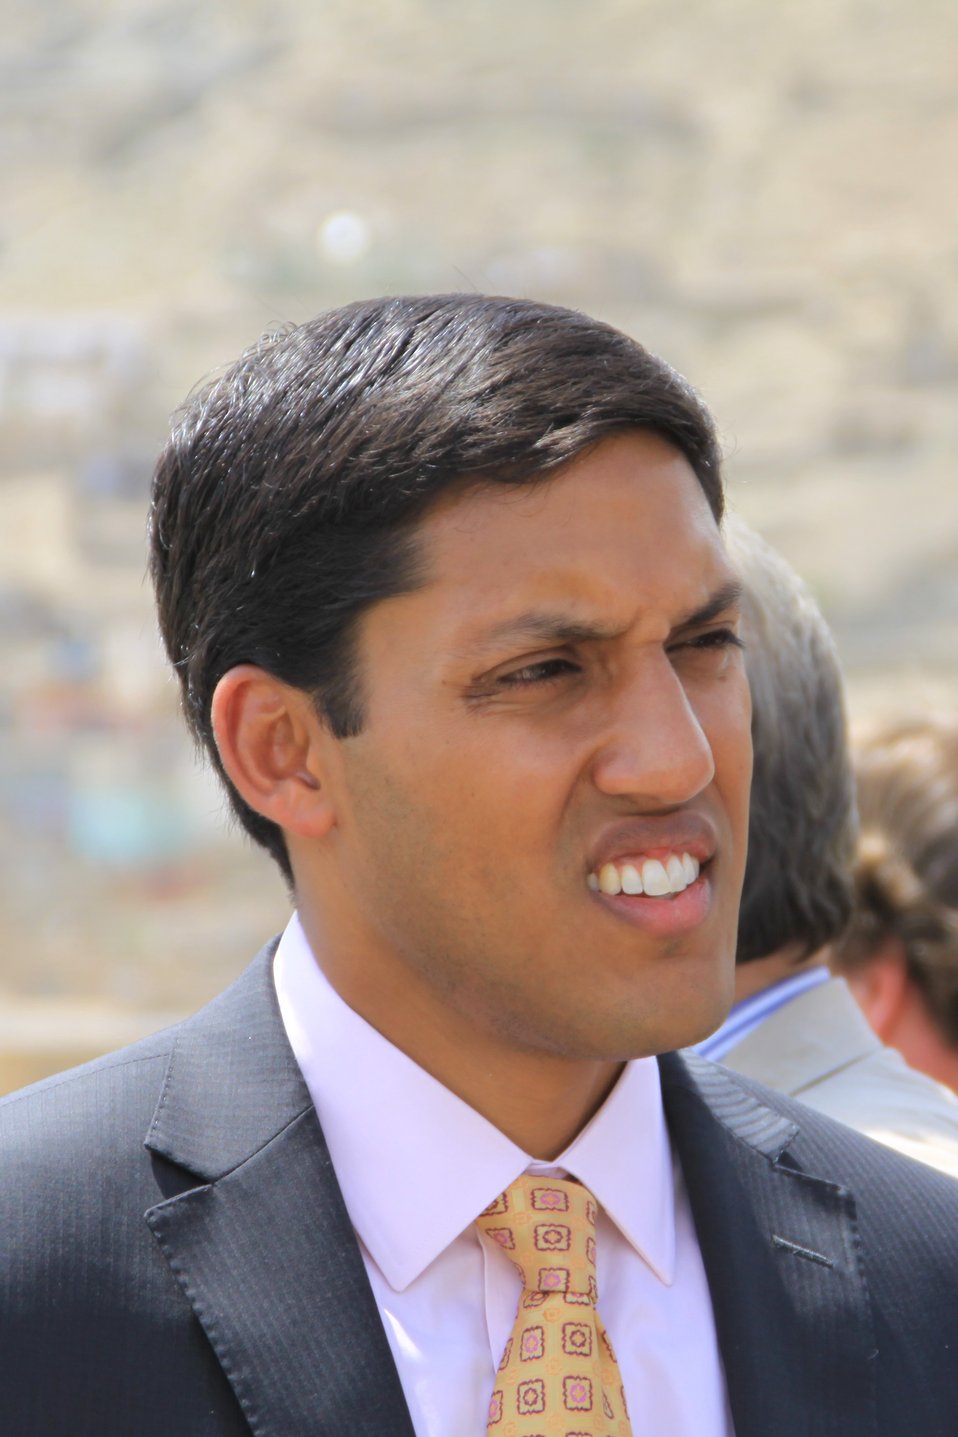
Badam Bagh Farm